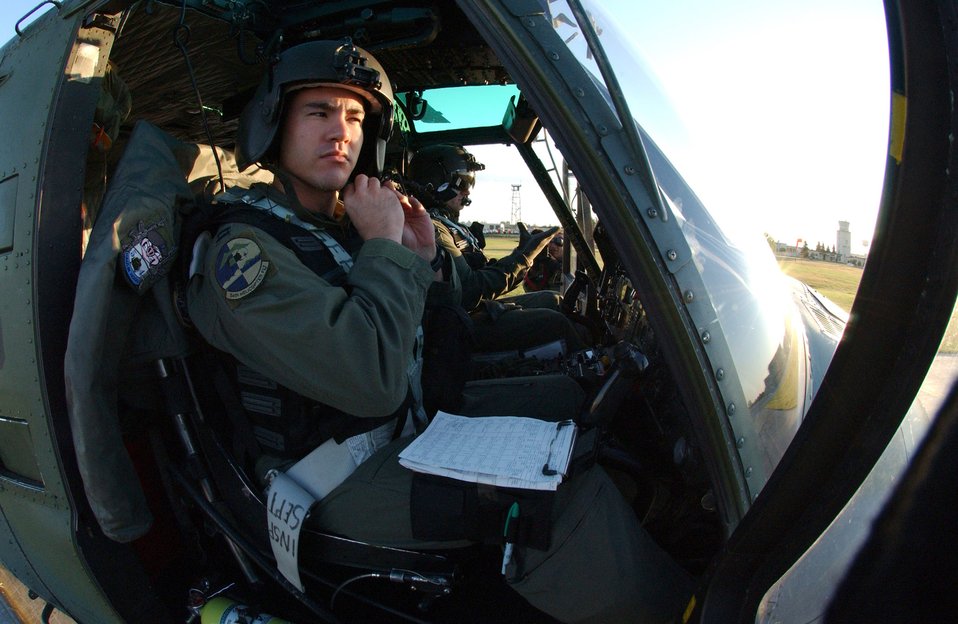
Minot helicopter flight supports hurricane relief efforts

MINOT AIR FORCE BASE, N.D. --- Capt. David Fink adjusts his helmet strap in a UH-1N Huey helicopter in preparation for takeoff here Sept. 2. Captain Fink and a crew departed for Columbus Air Force Base, Miss., to assist in the Hurricane Katrina disaster relief efforts. Thirteen people and a helicopter from the 54th Helicopter Flight are deploying to aid the recovery.